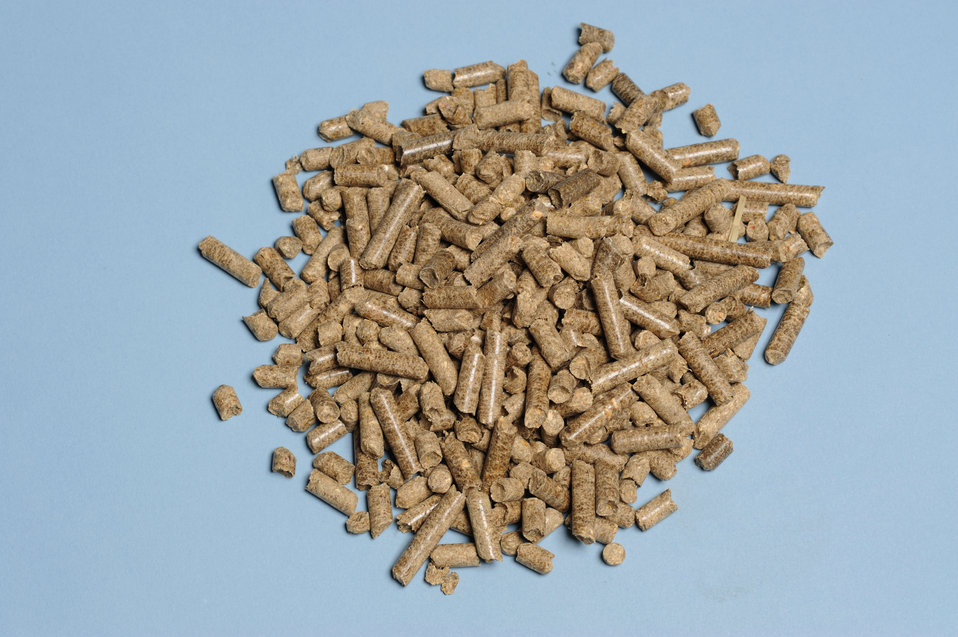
Corn stover, pelleted is part of the Idaho National Laboratory bioenergy program.